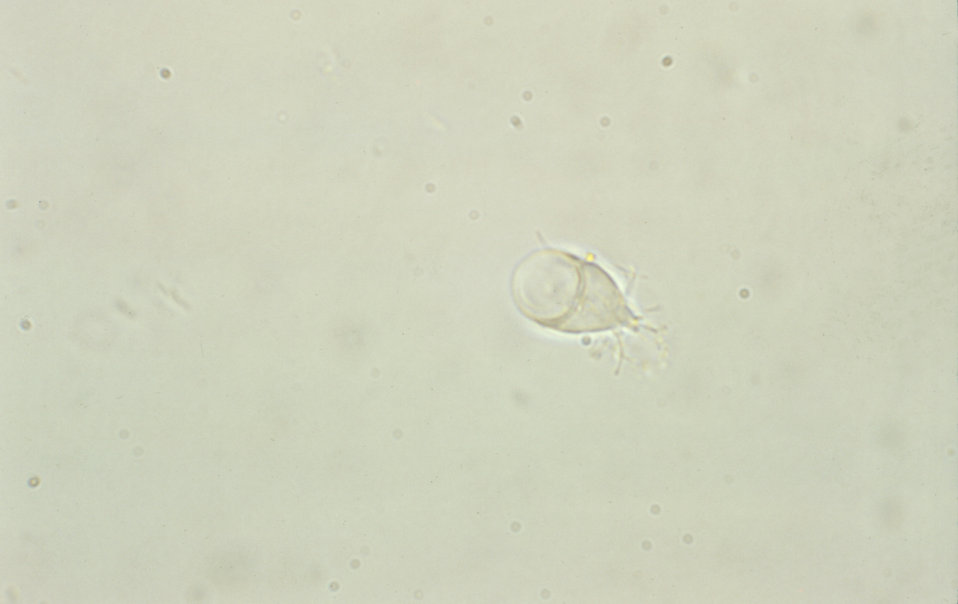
This unstained photomicrograph reveals a Giardia lamblia trophozoite with its sucking disk visible.